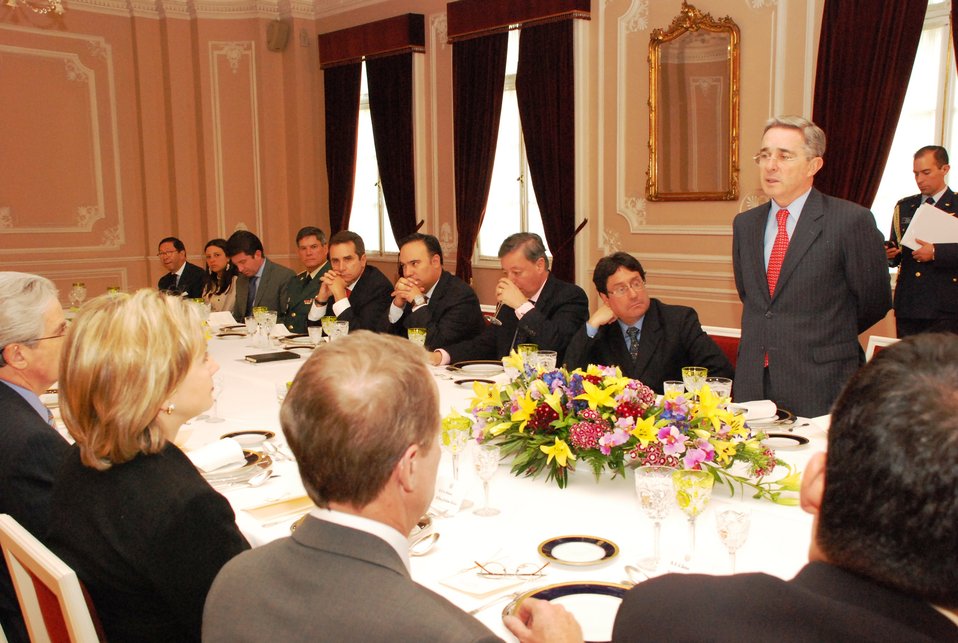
Secretary Clinton Attends Luncheon Hosted By Colombian President

Colombian President Uribe welcomes U.S. Secretary of State Hillary Rodham Clinton to a luncheon in Bogotá, Colombia, on June 9, 2010.